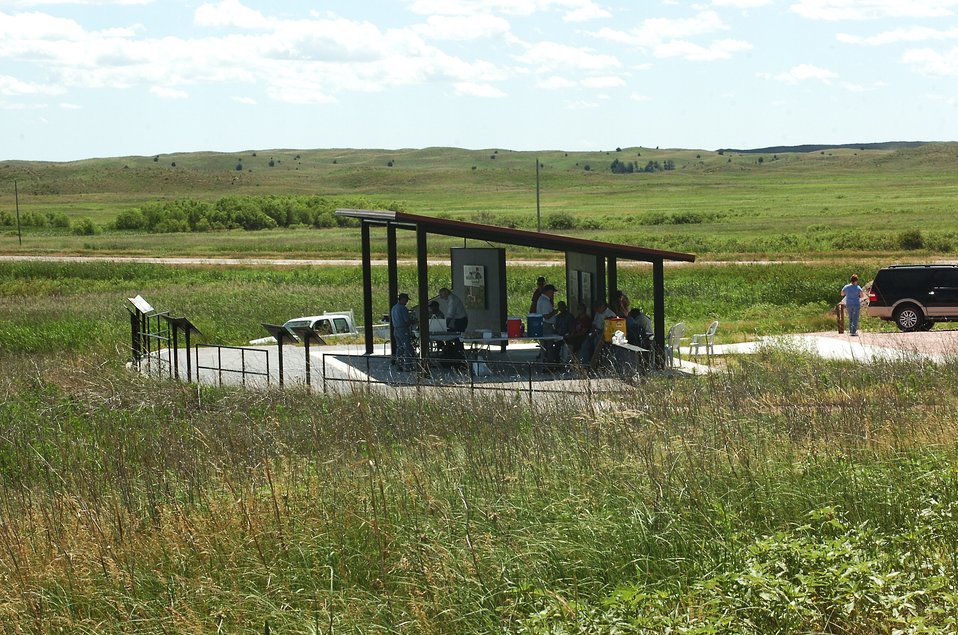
Valentine National Wildlife Refuge

Families are welcome to come out and enjoy a picnic and observe wildlife at Valentine National Wildlife Refuge in Nebraska.